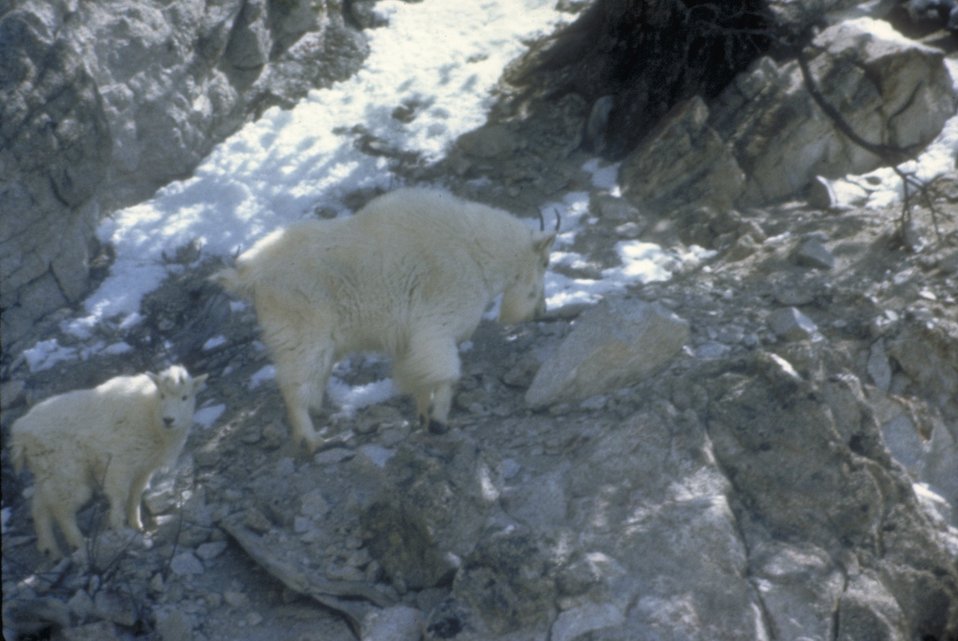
Mountain goats